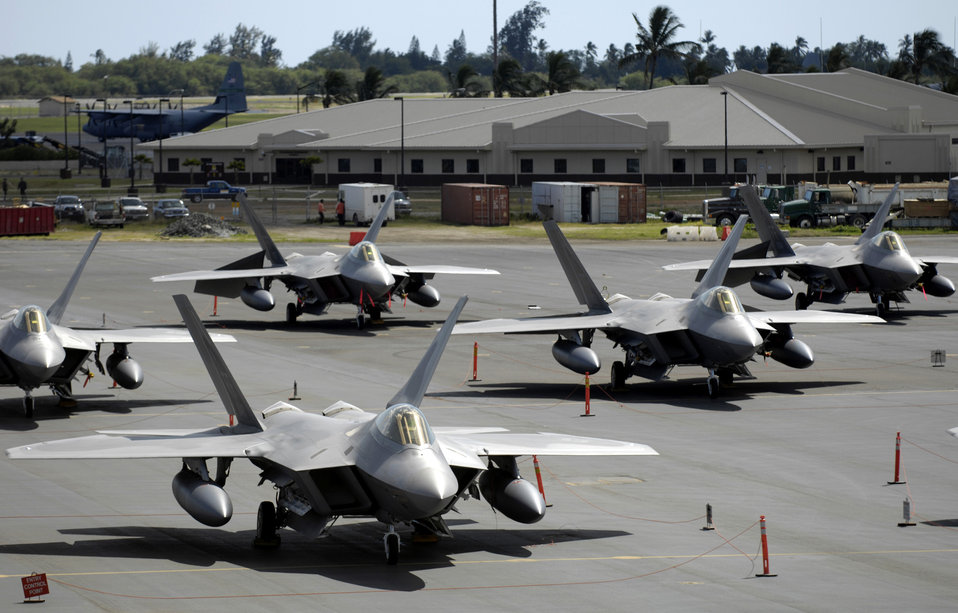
F-22 Raptors sit on the flight line at Hickam Air Force Base, Hawaii Feb. 12. The fighters and more than 250 Airmen from the 27th Fighter Squadron at Langley Air Force Base, Va., are bound for Kadena Air Base, Japan. This is the Raptor's first overseas operational deployment.